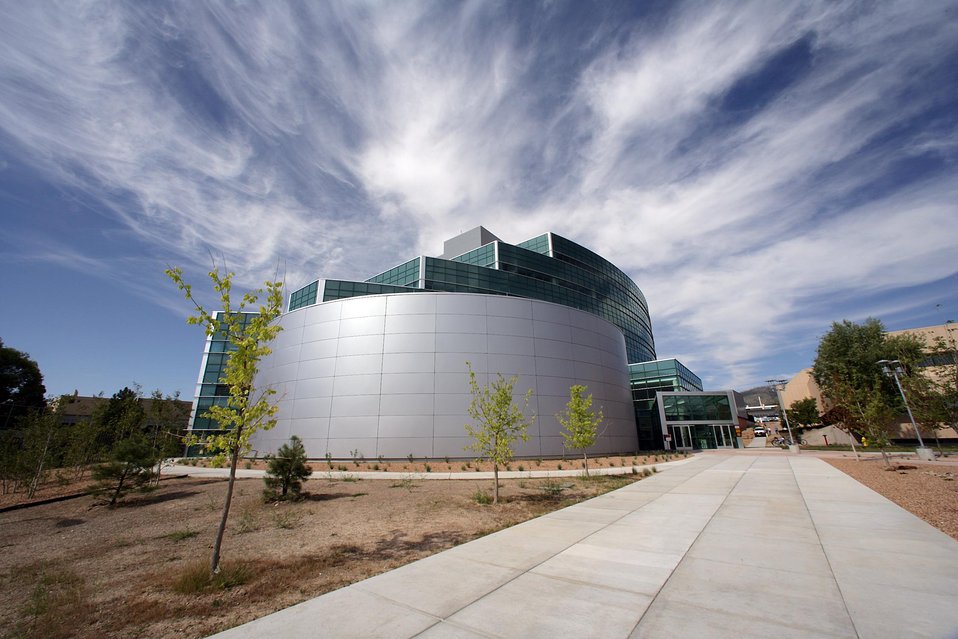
Entrance to the National Security Building at Los Alamos National Laboratory, November 2011.